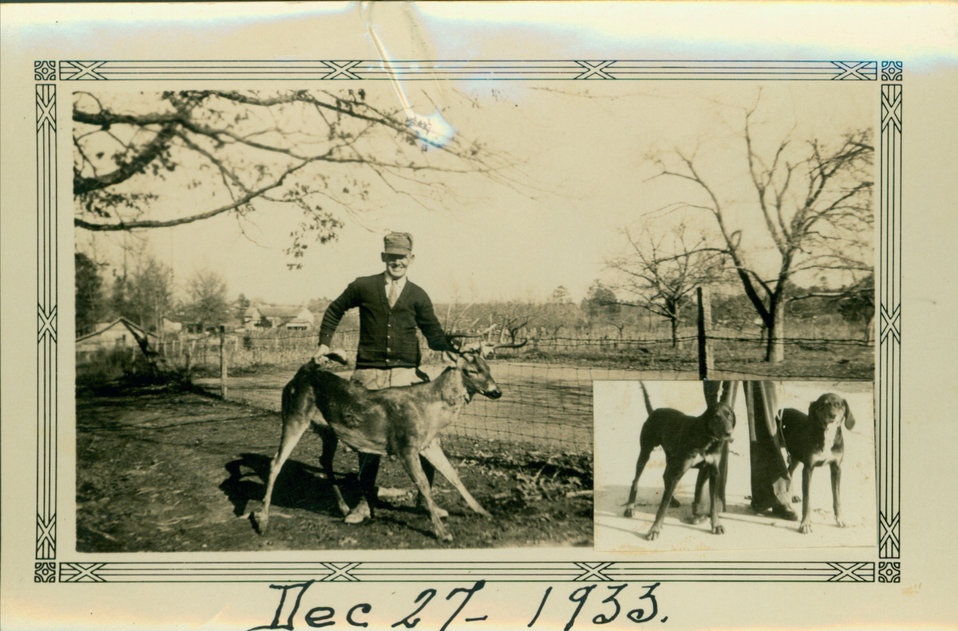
12/27/1933

Unidentified man wearing a cap, cardigan, and tie, holding up a dead deer. He is standing in front of a wire fence that borders a roadway. Buildings are visible in the left background. Inserted into the lower right corner of the photograph is an image of two dogs.